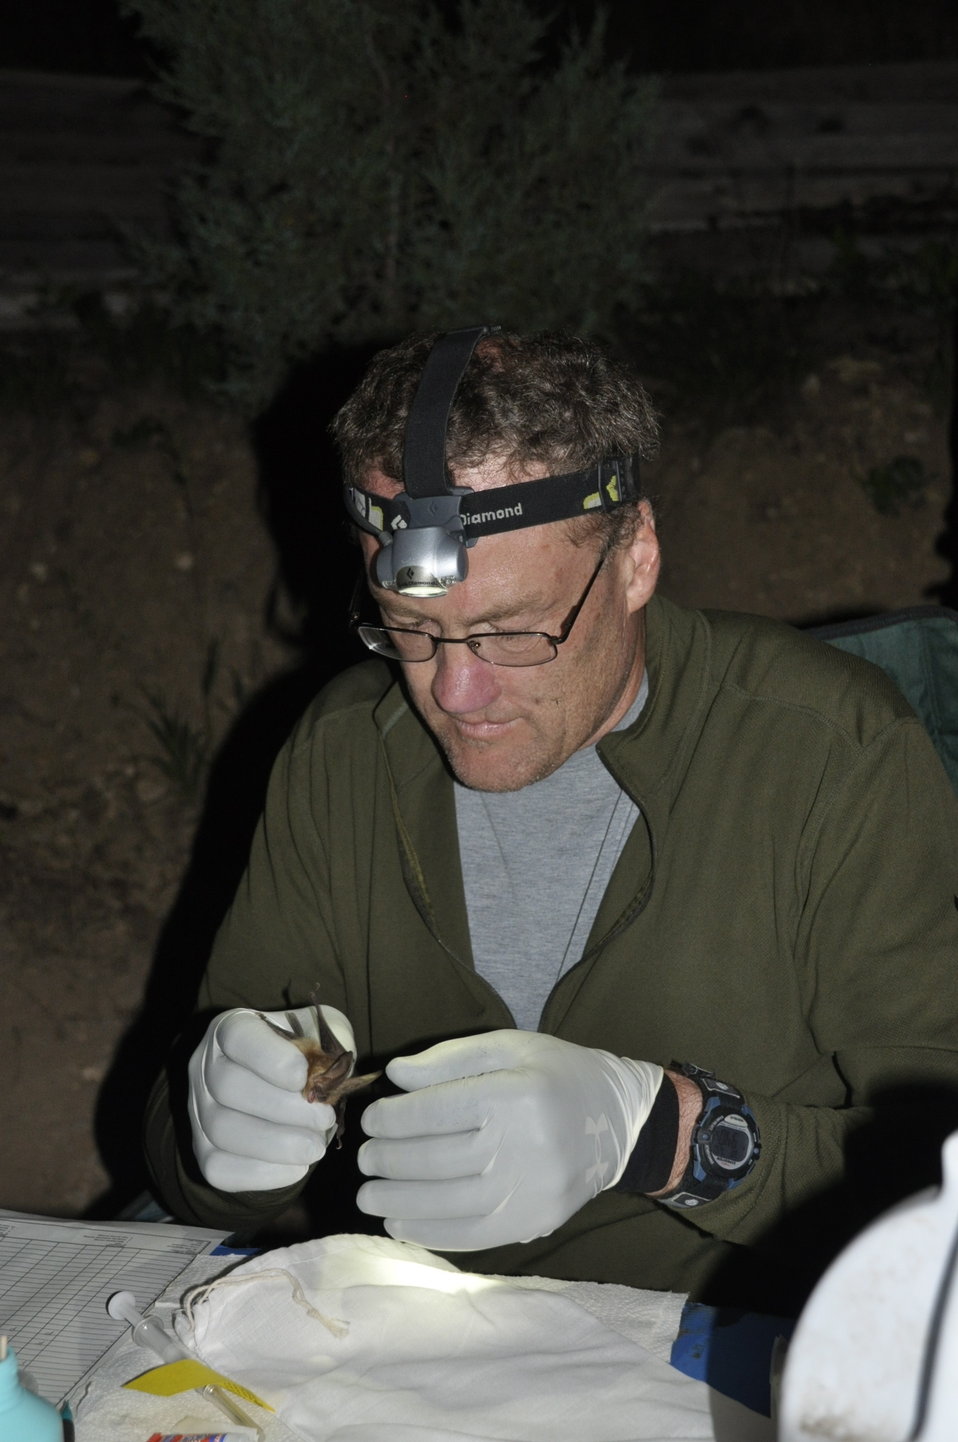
NPS wildlife vet inspects bat

National Park Service wildlife veterinarian Kevin Castle inspects a Townsend's big-eared bat.